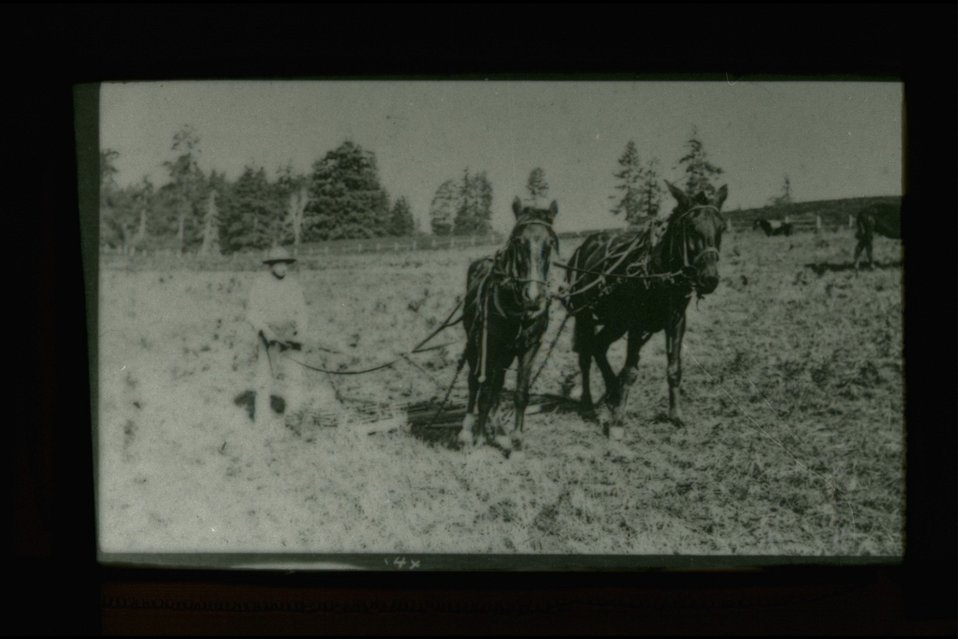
Rogue River - Farmer working field with horses.